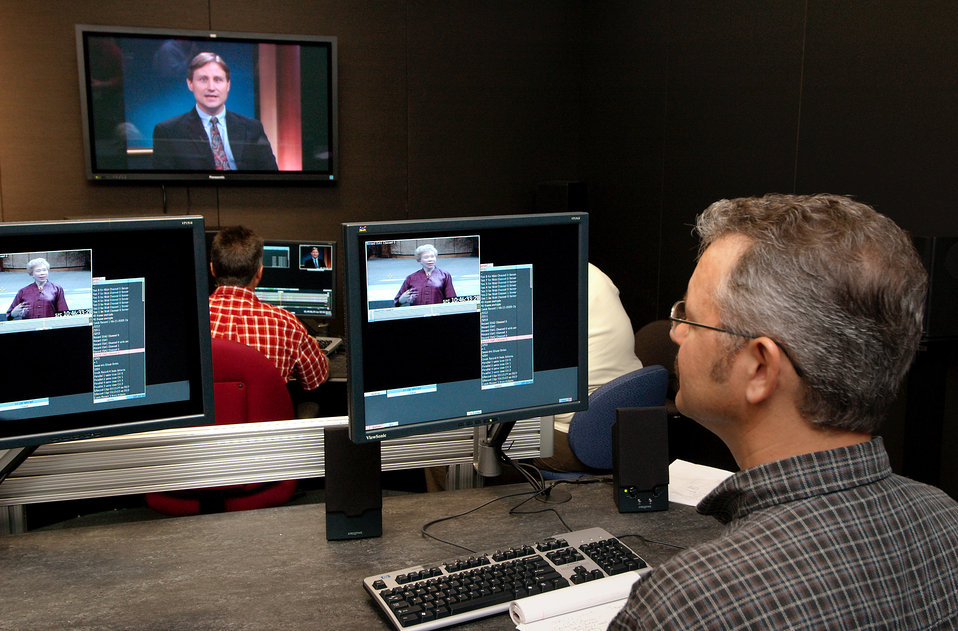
This photograph shows Centers for Disease Control's Activity Lead for the Division of Specialized Media, Pete Seidel, as he was at work in one of the broadcasting edit suites of the organization's Global Communications Center, also known as Building 19.